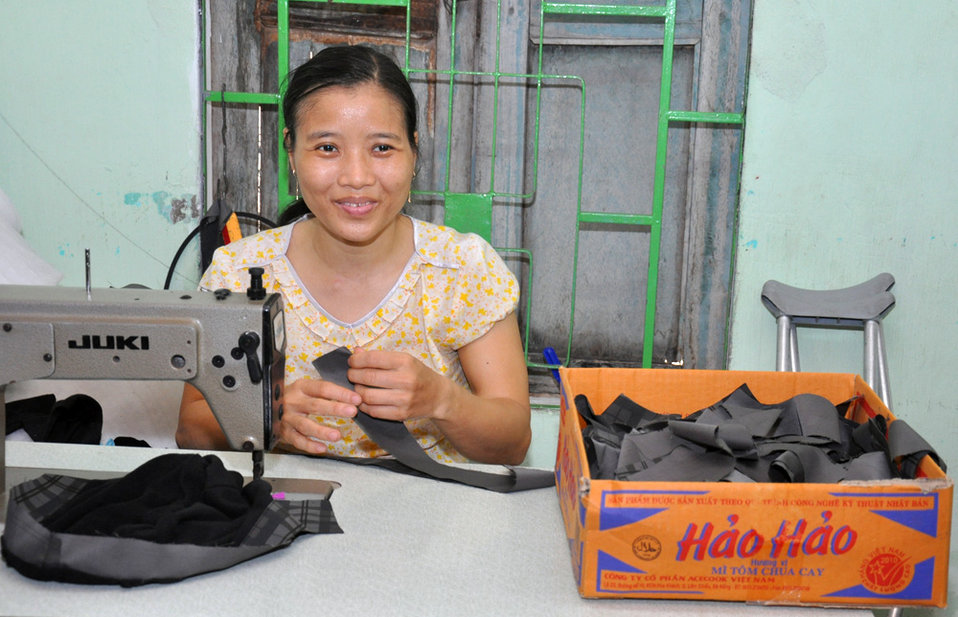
USAID assists persons with disabilities in Vietnam

Ngo Thi Thu Hong, 40, helps manage a cooperative for 15 mobility-impaired tailors she and others formed in Danang following business courses and technical support from a USAID-funded activity. Here she works on padded hoods for warm jackets destined for Europe.